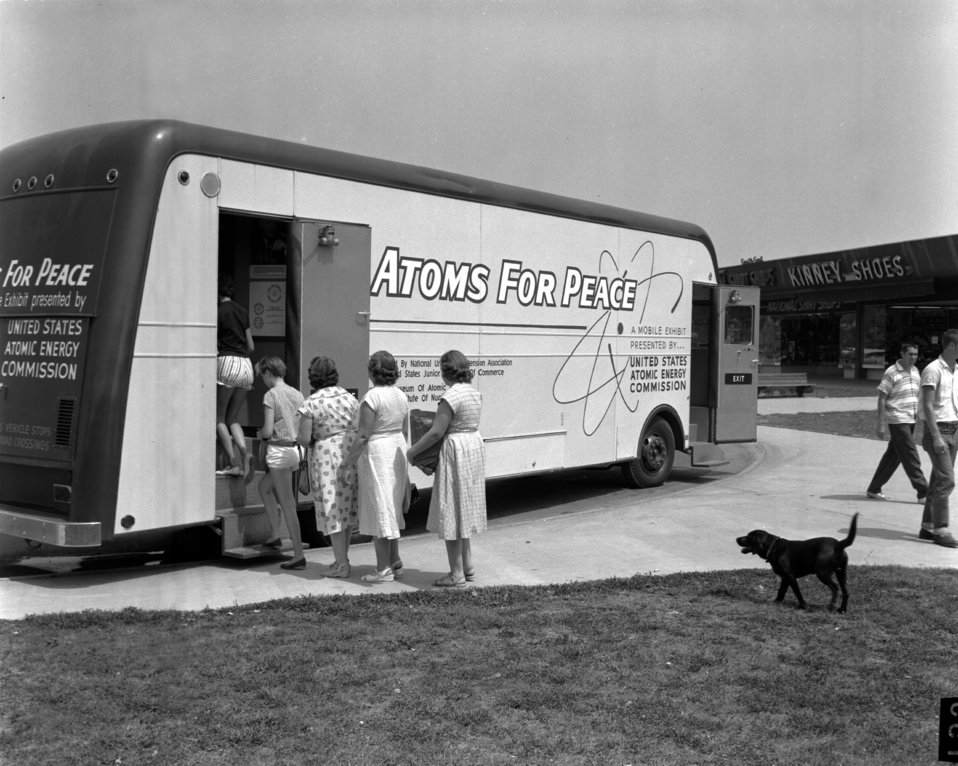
Atoms For Peace Traveling Exhibit in Oak Ridge

57-1239 DOE photo by Ed Westcott

Atoms For Peace Traveling Exhibit in Oak Ridge 1957